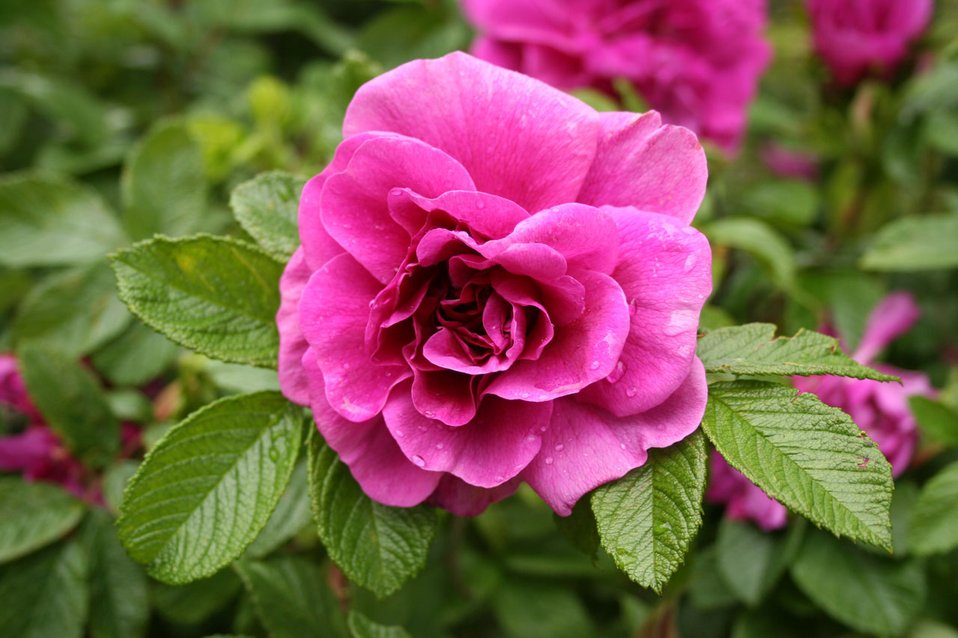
Rose

Detailed image of rose flower.